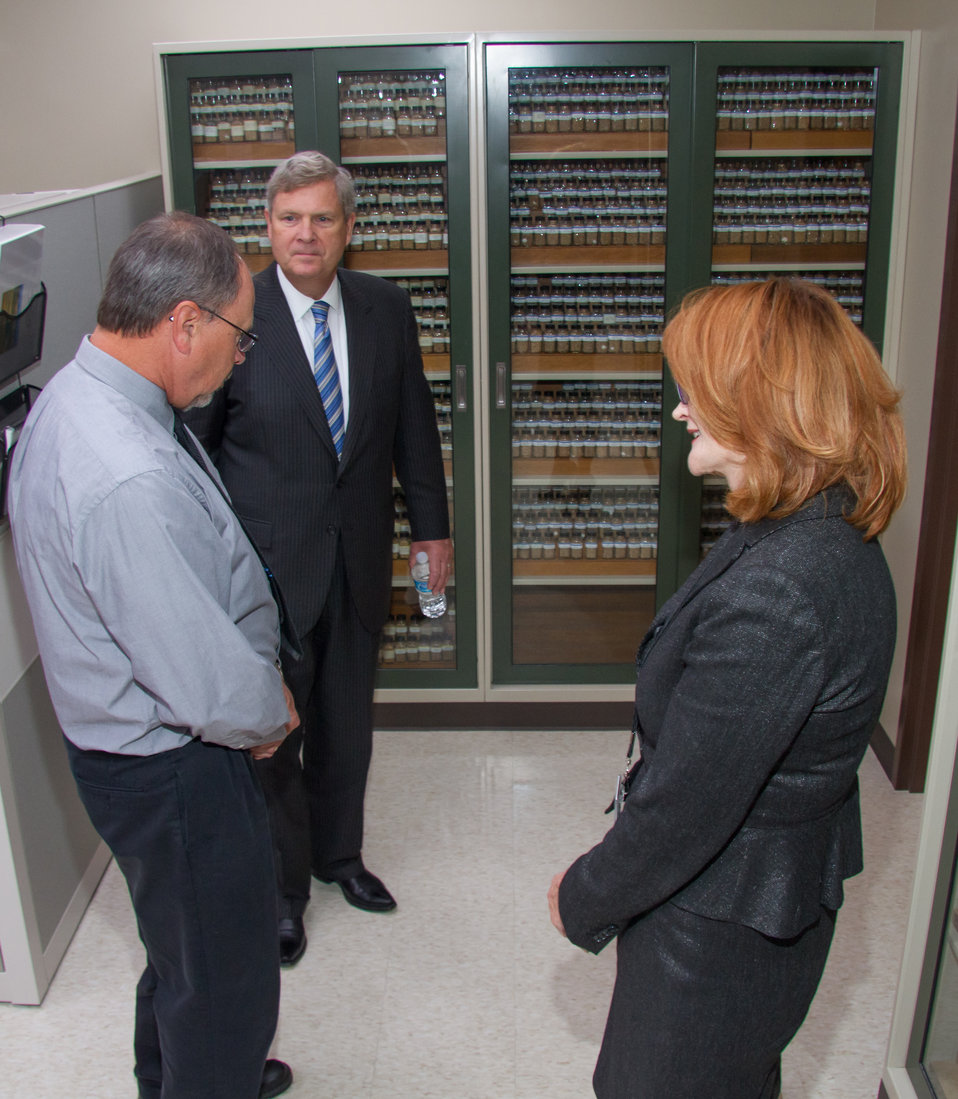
Agriculture Secretary Tom Vilsak (c) marveled at the tremendous skill required of official grain inspectors to recognize grain varieties in order to classify wheat properly. James Whalen, (l), Chair of Grain Inspection, Packers and Stockyards Administration (GIPSA), Board of Appeals and Review and Mary Alonzo, Director of GIPSA's Technology and Science Division, explain the magnitude of the challenge in Kansas City, MO, on Wednesday, Oct. 23, 2013.